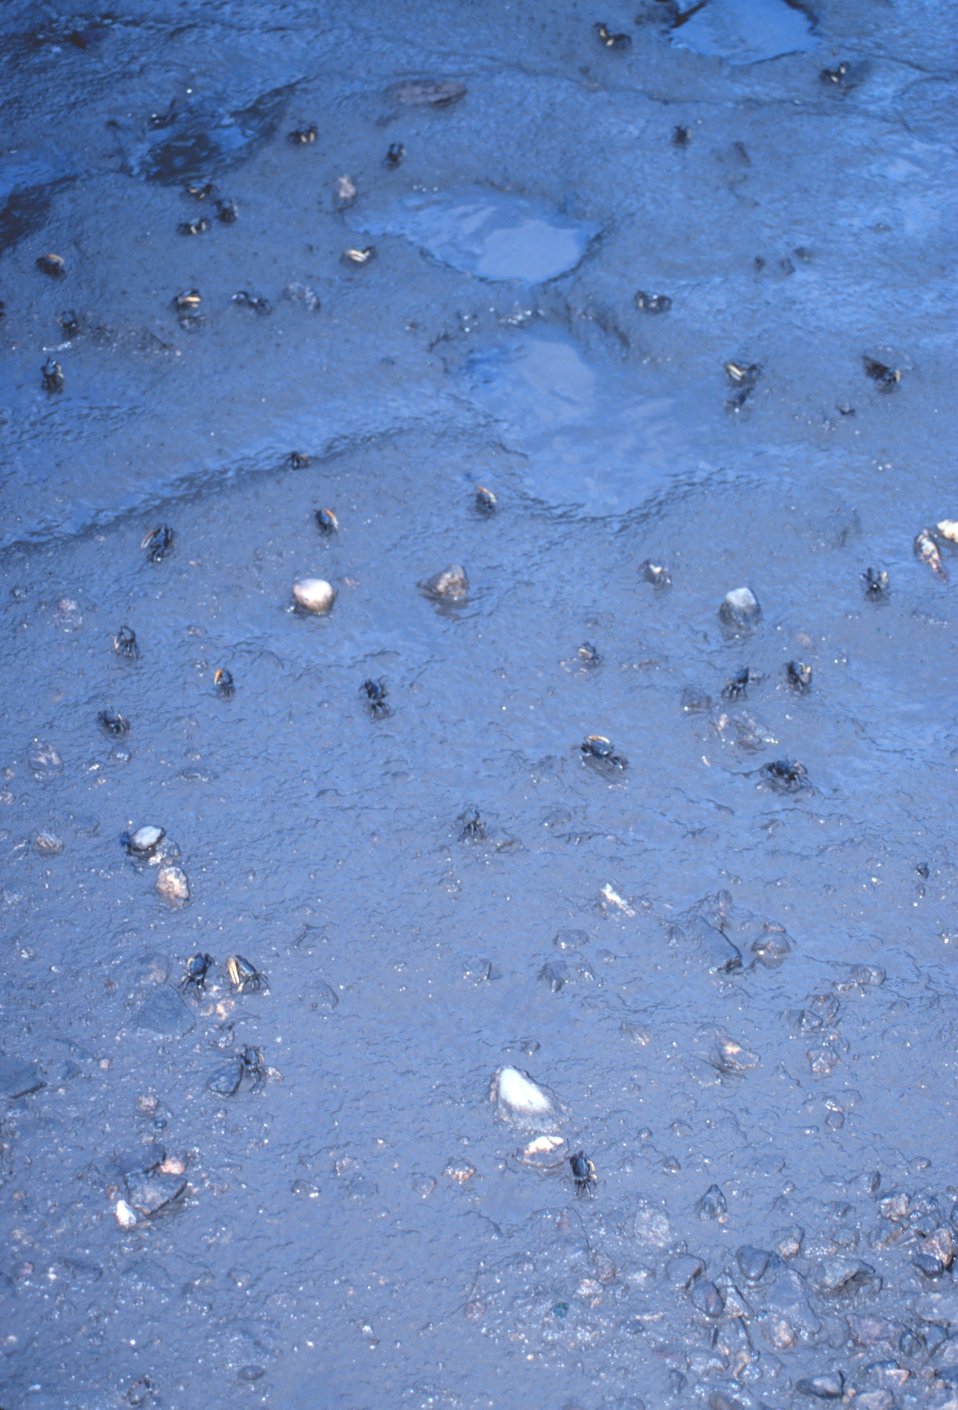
Life on the mudflats at low tide - Helena Island